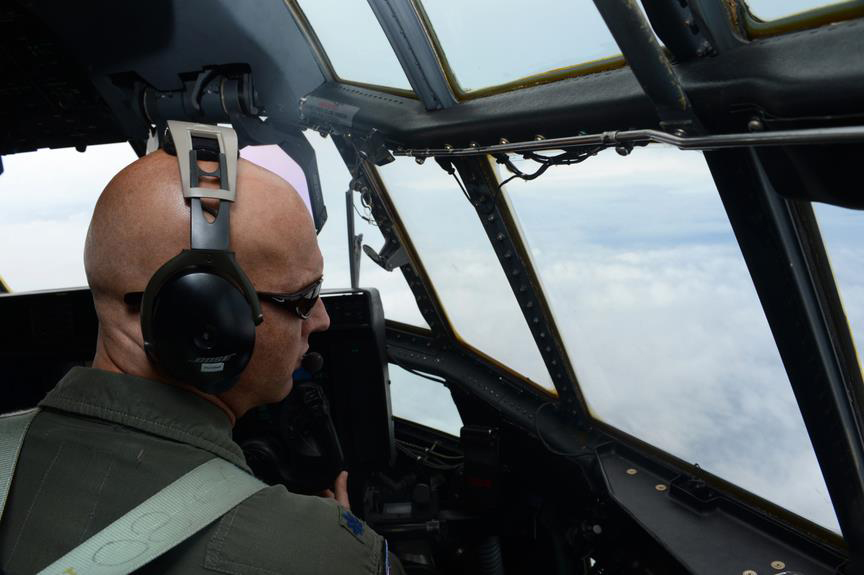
Hurricane Sandy

Lt. Col. Ty Piercefield, from the 53rd Weather Reconnaissance Squadron, pilots a WC-130J Hercules on a weather reconnaissance mission into Hurricane Sandy Oct. 29, 2012, somewhere over the Eastern coastline of the U.S. The 53rd WRS conducted weather reconnaissance missions in preparation for Hurricane Sandy making landfall along the Eastern coastline of the United States